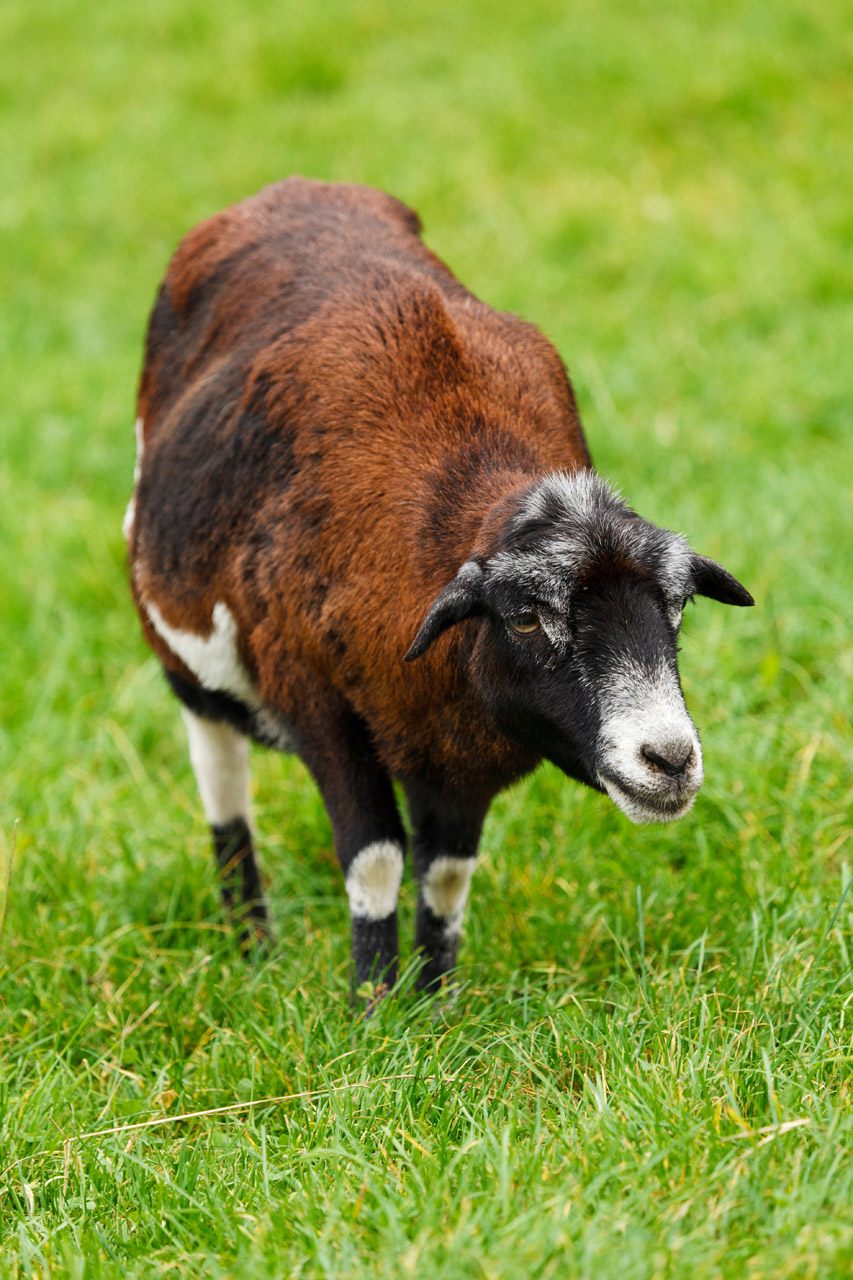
Goat on grass

Brown goat on green grass.